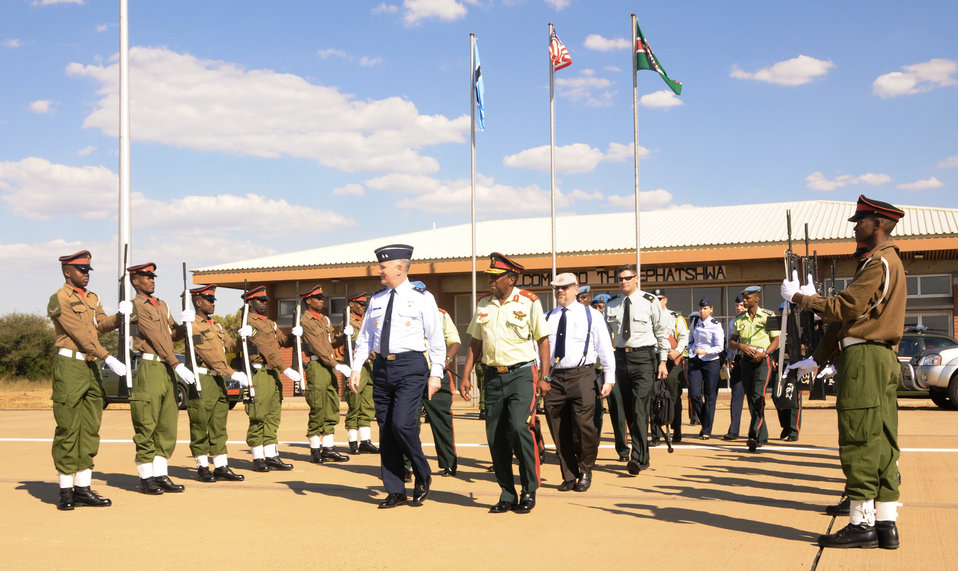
Air Forces Africa officials visit Botswana

After touring the installation, Maj. Gens. Ronald Ladnier (left) and T.M. Paledi prepare to depart March 10, 2010, from Thebephatshwa Air Base, Botswana. General Ladnier is the commander of 17th Air Force (Air Forces Africa) and General Paledi is the commander of the Air Arm, Botswana Defense Force.